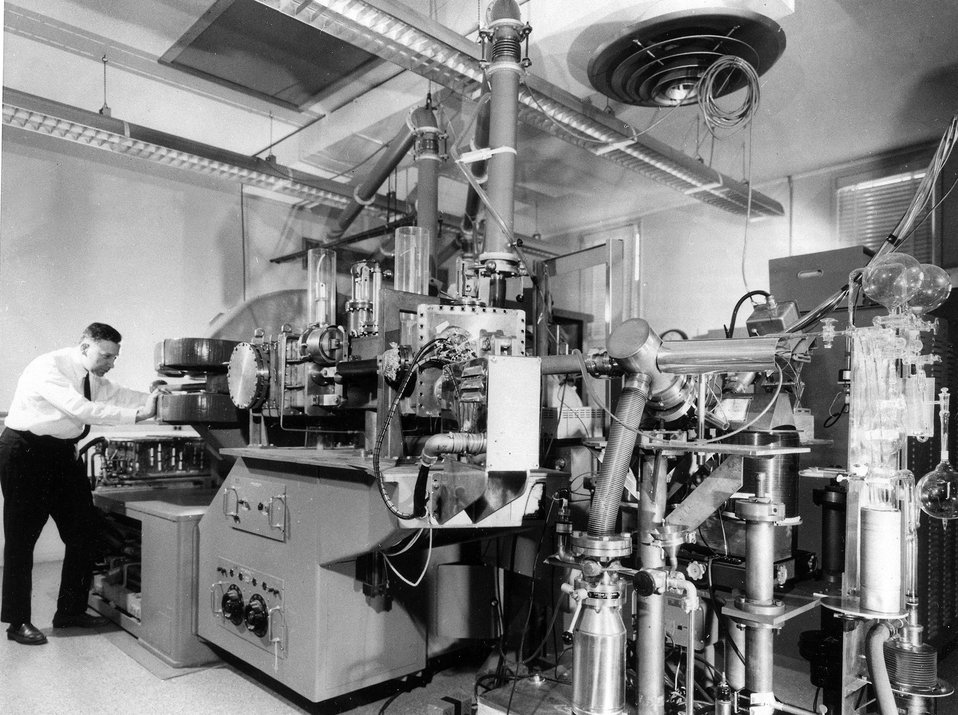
The Brookhaven National Laboratory's electromagnetic isotope separator is being used to generate intense, low energy, mass analyzed beams of ions for research on ion-molecule collision processes. c. 1968